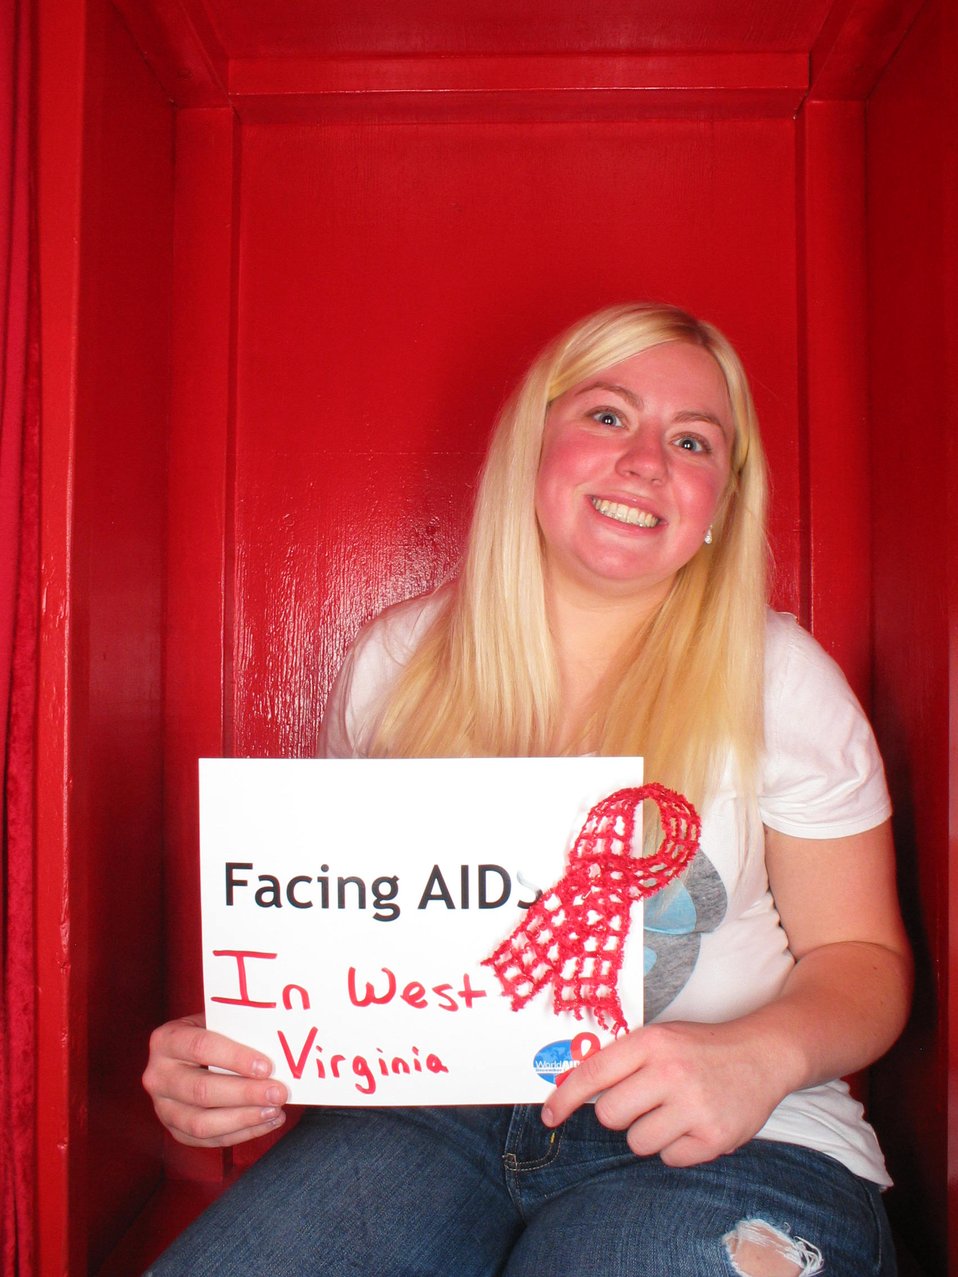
Facing AIDS in West Virginia